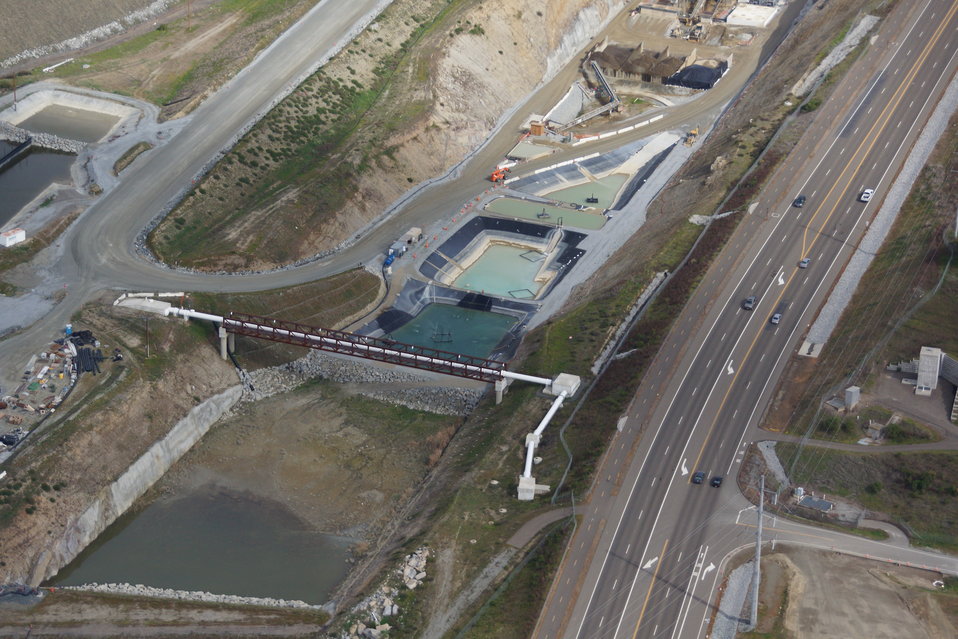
Aerial View of Folsom Dam Auxiliary Spillway

An aerial view shows the entire construction site of the Folsom Dam auxiliary spillway March 6, 2013. Excavation began in 2011 to remove 3.5 million cubic yards of rock and soil from the site. In 2012, the first steel and concrete were placed for the control structure—essentially a second dam—that will stand as tall as the Statue of Liberty when completed. The completed dam and chute will include 350,000 cubic yards of concrete, enough to line up concrete trucks from Sacramento to Los Angeles, and 24 million tons of steel, enough to build two Eiffel Towers. The project is estimated to be completed by October 2017 and is one piece of a larger plan to help the Sacramento region reduce the risk of flooding to a one-in-200 chance for flooding in any given year.